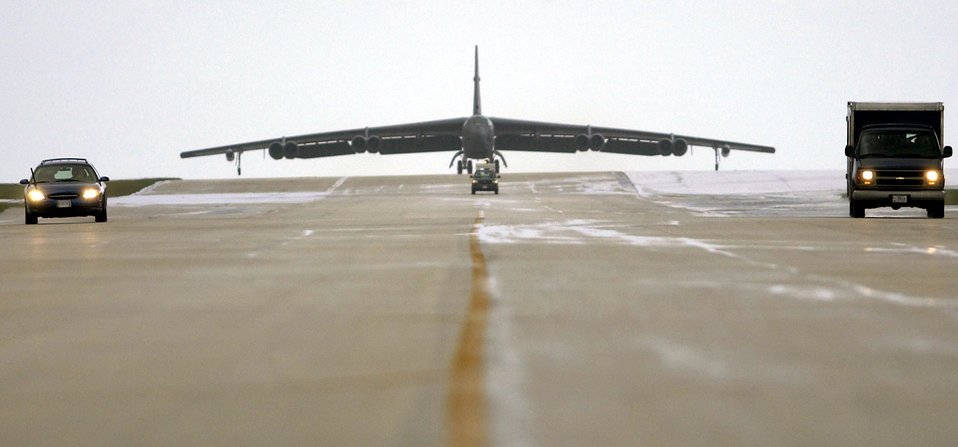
Bombers at Andersen

ANDERSEN AIR FORCE BASE, Guam -- The first of six B-52 Stratofortresses taxis to its parking spot here after landing Feb. 22. The B-52s and about 300 people from Minot Air Force Base, N.D., are deploying here to support U.S. Pacific Command's request for a rotational bomber force on Guam.